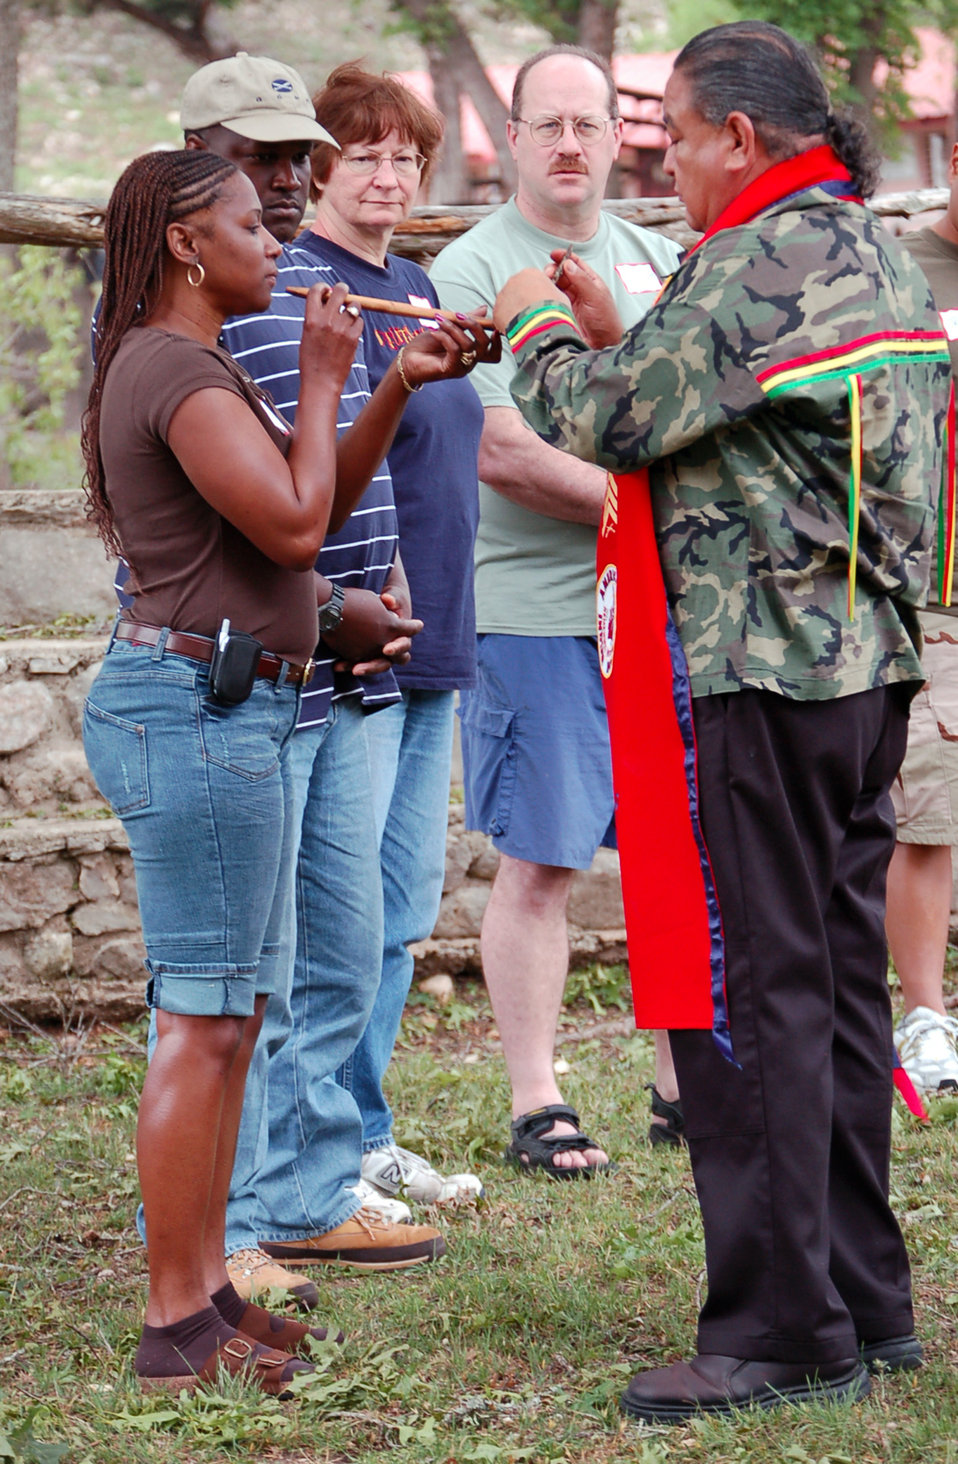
Retreat comes right on time

Jesse Padilla, a Tigua Tribe elder from the Ysleta del Sur Pueblo near El Paso, Texas, lights a ceremonial pipe for Nina Taylor during a sacred spiritual ceremony at a retreat in Hunt, Texas, on April 22, 2006. Also taking part in the ceremony are (left to right) Master Sgt. Don Taylor, Reserve Army Maj. Oxana Werbiansky and her husband, Dwight Fish. The couples attended the retreat April 20 to 27 hosted by the Military, Veteran and Family Assistance Foundation. The retreat helps couples reconnect after the military spouse returns from a deployment.